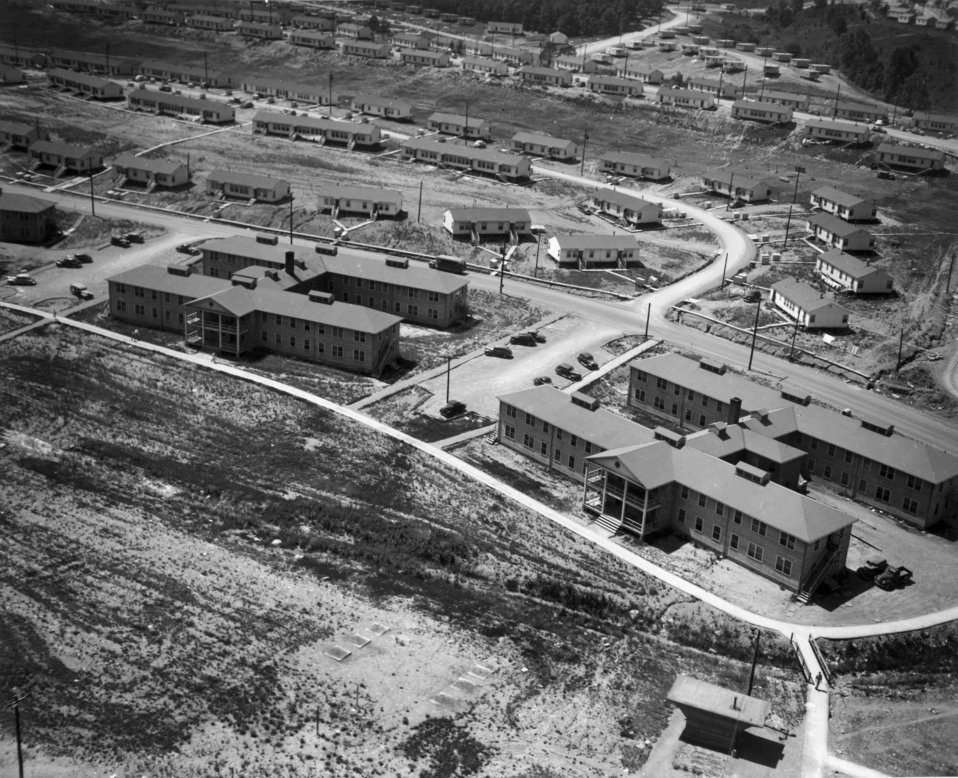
Lehigh Lane Oak Ridge

A-48 DOE photo by Ed Westcott 1944 Oak Ridge, Tennessee